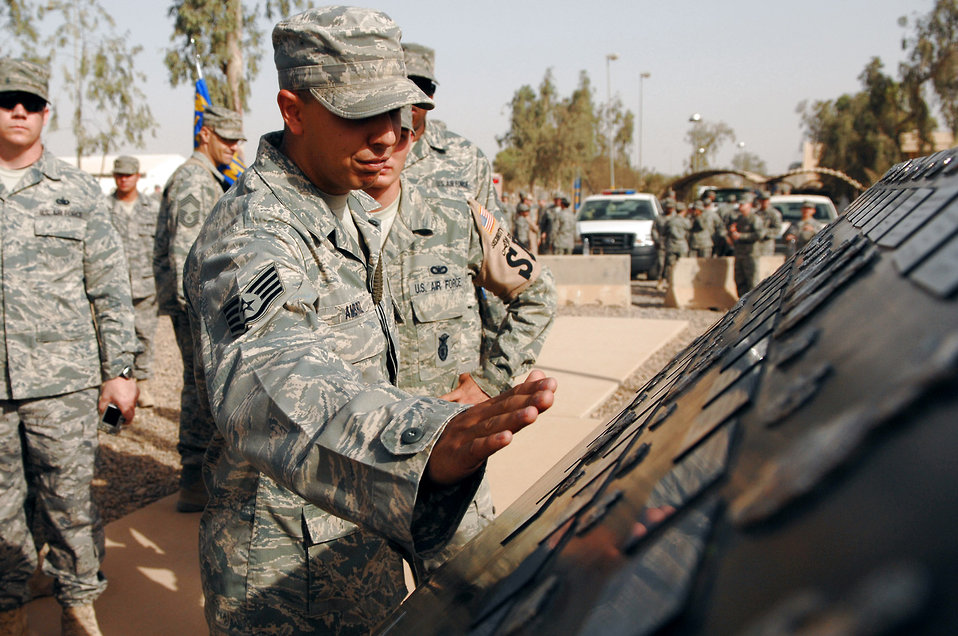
455 AEW holds memorial vigil

Airmen assigned to the 332nd Air Expeditionary Wing at Balad Air Base, Iraq, read the Airman?s Memorial following a Memorial Day observance ceremony May 26. During the ceremony, the names of 44 Airmen assigned to the 332nd AEW who died since 2003 were read. Those names, along with the deceased Airmen?s Air Force specialty code badges, are displayed on the Airman?s Memorial.